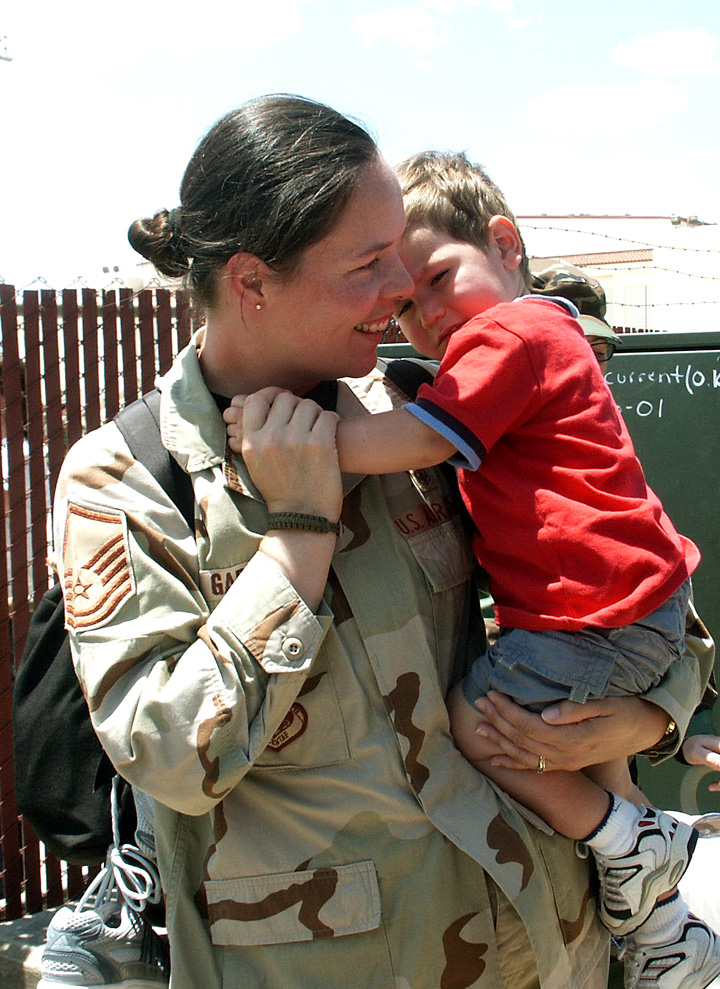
Back home

Master Sgt. Dawn Garza snuggles her son, Christopher, at the Kelly Field passenger terminal in San Antonio minutes after returning from a four-month deployment to Iraq on Tuesday, May 16, 2006. Sergeant Garza, a medical technician in the 859th Surgical Operations Squadron, was one of about 170 personnel from the 59th Medical Wing who deployed in January to work at the Air Force theater hospital at Balad Air Base.